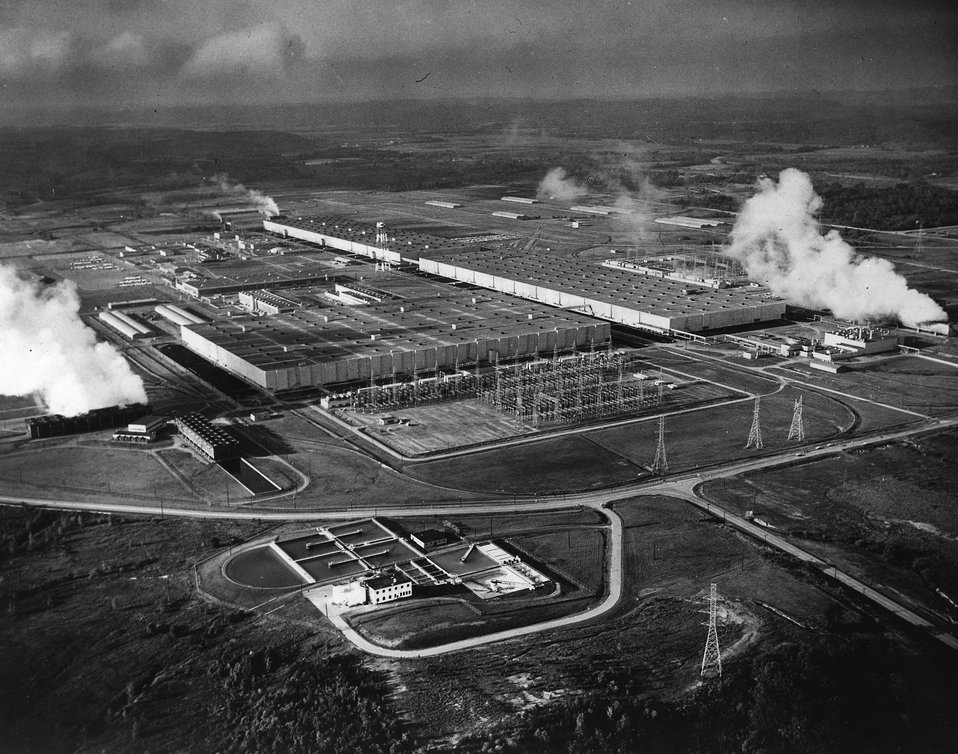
Portsmouth Gaseous Diffusion Plant, located on a 4,000-acre tract of land. Its three process buildings cover approximately 220 acres, or 9,650,000 square feet of floor space. c. 1969